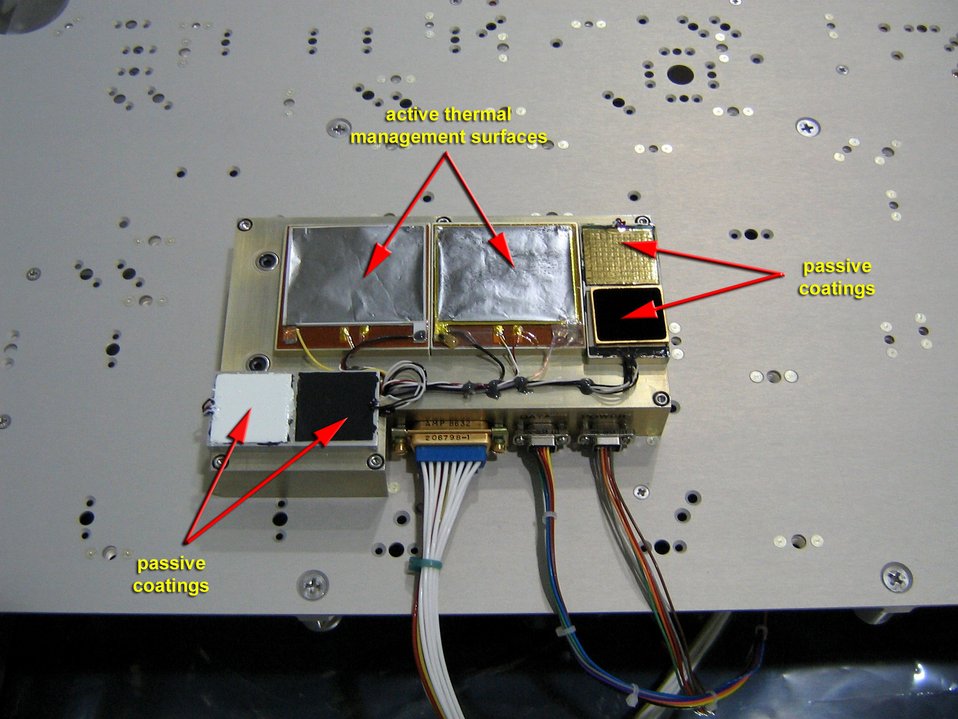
AF engineers create thermal control system for space use

Two active thermal management surfaces and four passive coatings packaged on the MISSE-6 flight module are shown. Air Force Research Laboratory engineers at Wright-Patterson Air Force Base, Ohio, have successfully integrated two existing technologies to create a thermal emission management system suitable for space use.